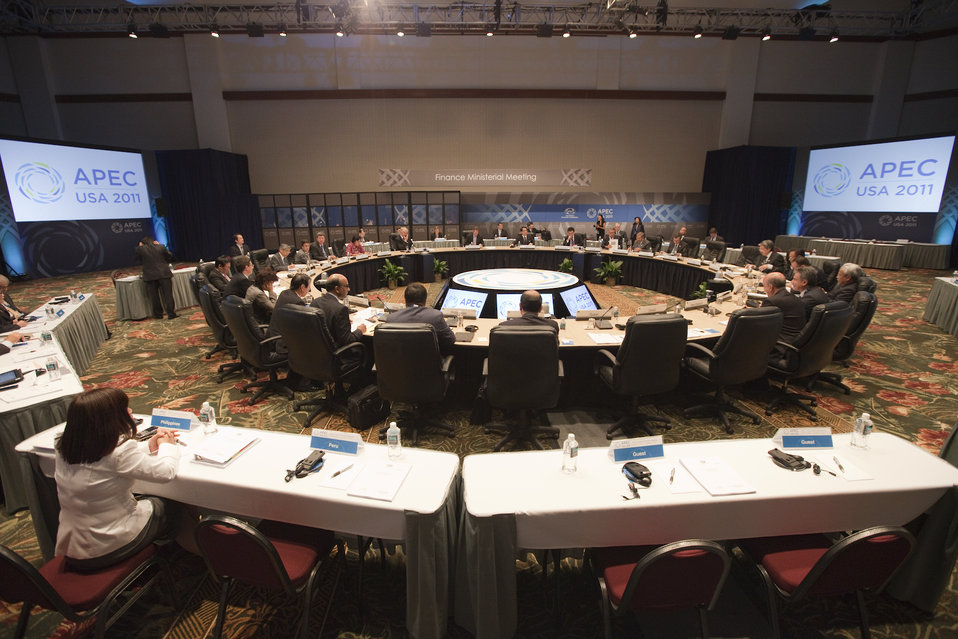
APEC Meeting of Finance Ministers

Treasury Secretary Tim Geithner hosted the 2011 Asia-Pacific Economic Cooperation (APEC) Meeting of Finance Ministers in Honolulu, Hawaii to discuss policies that will strengthen the global recovery and bring about strong, sustained and more balanced growth in order to boost job creation and incomes in the United States and throughout the APEC region.